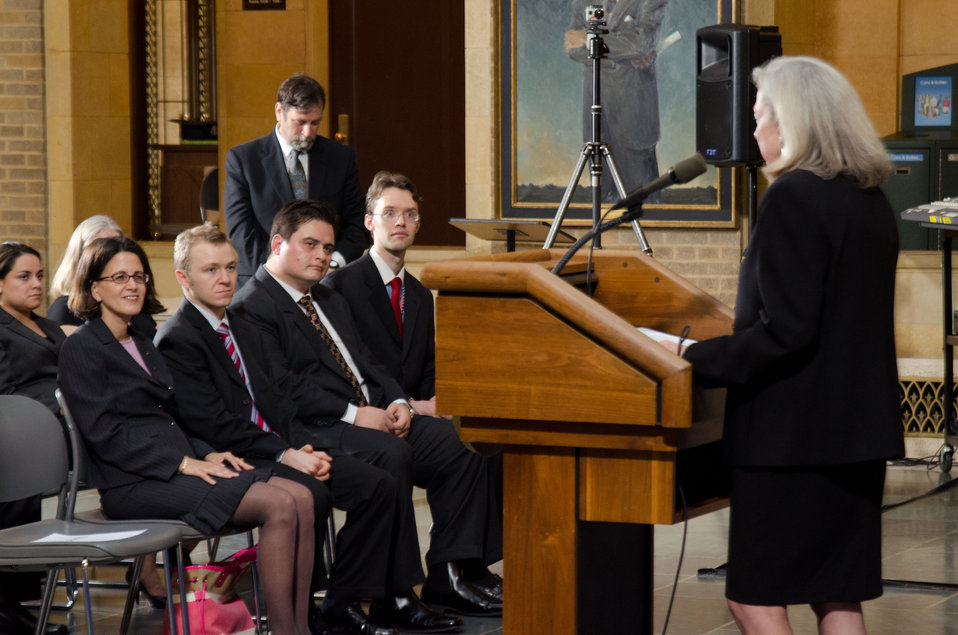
Agriculture Foreign Agriculture Service Acting Administrator Suzanne Heinen (right) made remarks and administered the oath of office during the Foreign Service Oath of Office Ceremony for (front row, left-right) Sigal Bernstein, Evan Mangino, Anthony Gilbert and Andrew Anderson-Sprecher who became Agriculture Foreign Service Officers, at the U.S. Department of Agriculture, on Thursday, March 15, 2012. They will be stationed in Bogota, Columbia; Beijing, China; Lima Peru; and Tokyo, Japan.